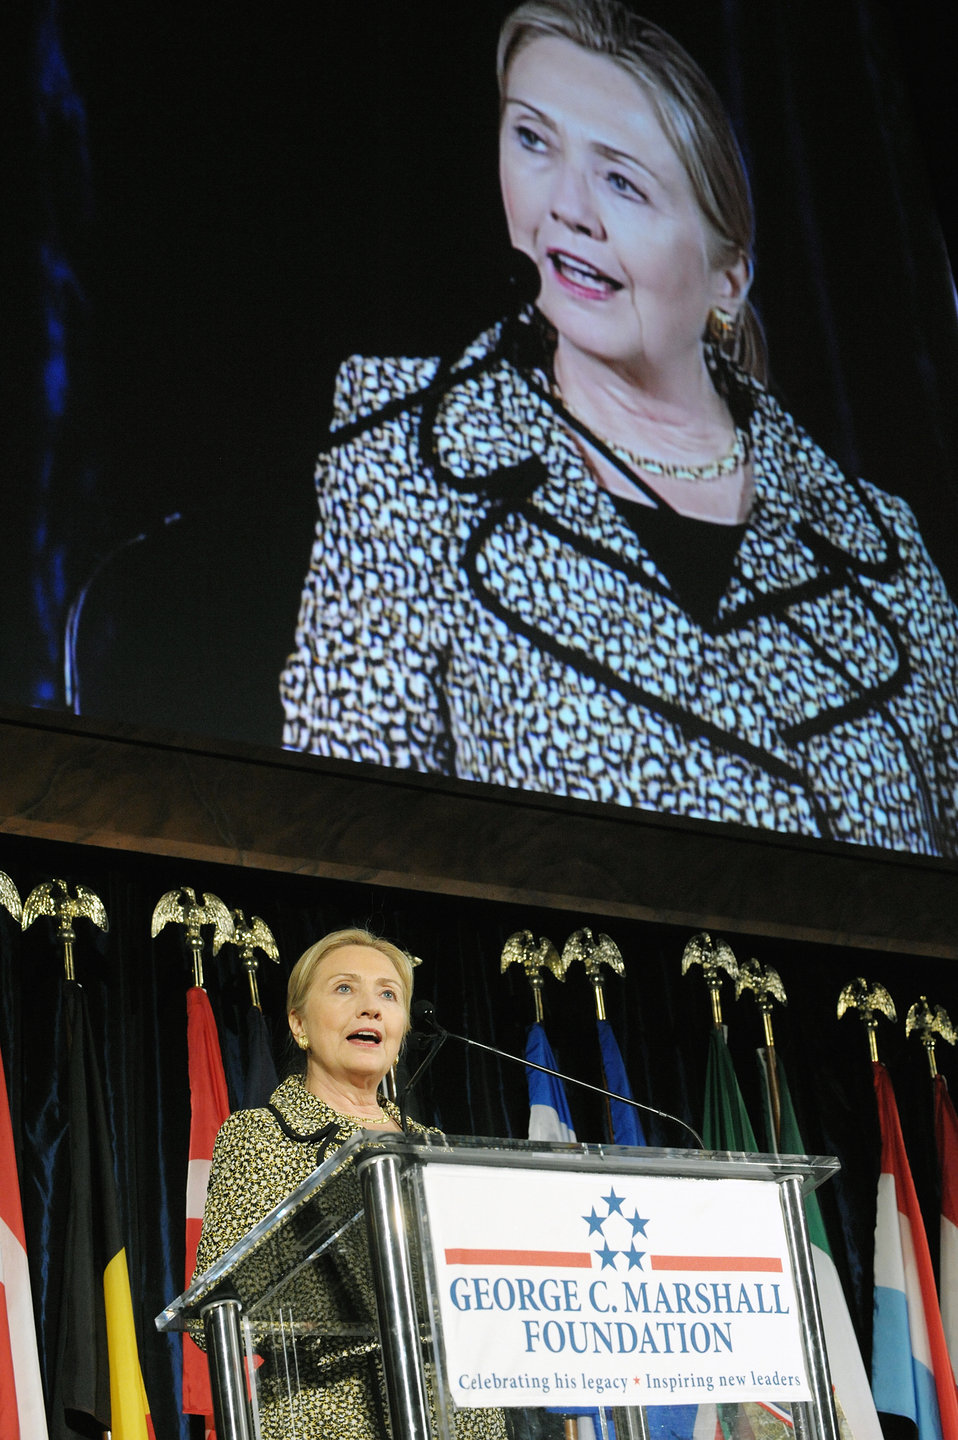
Secretary Clinton Delivers Remarks Upon Receiving the 2011 George C. Marshall Foundation Award

U.S. Secretary of State Hillary Rodham Clinton delivers remarks upon receiving the 2011 George C. Marshall Foundation Award at the National Building Museum in Washington, D.C., on June 2, 2011.